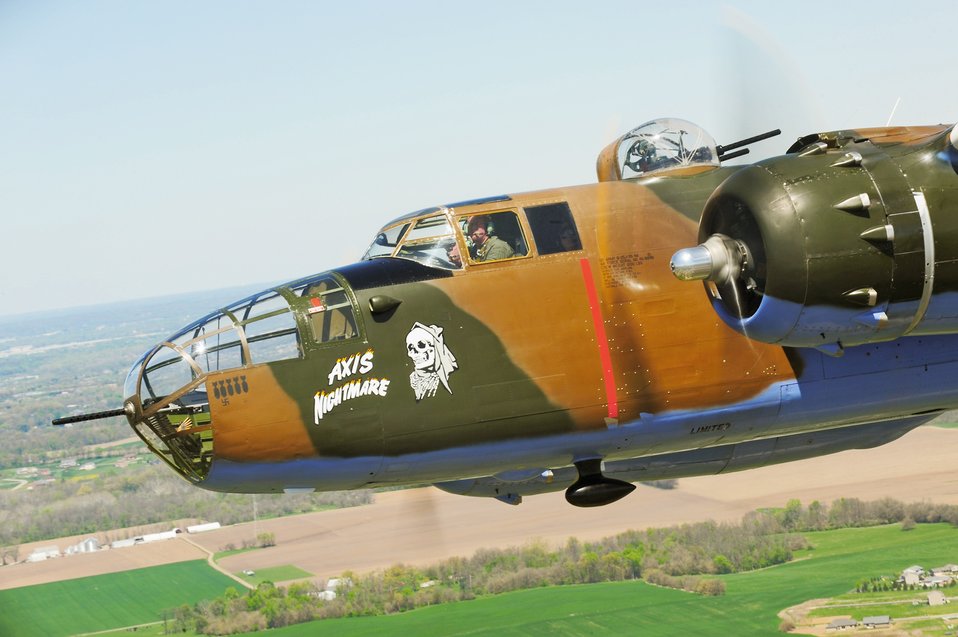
B-25 Mitchells fly again

A vintage B-25 Mitchell bomber flies near the National Museum of the U.S. Air Force at Wright-Patterson Air Force Base, Ohio, April 18, 2010, during a memorial flight honoring the Doolittle Raiders.